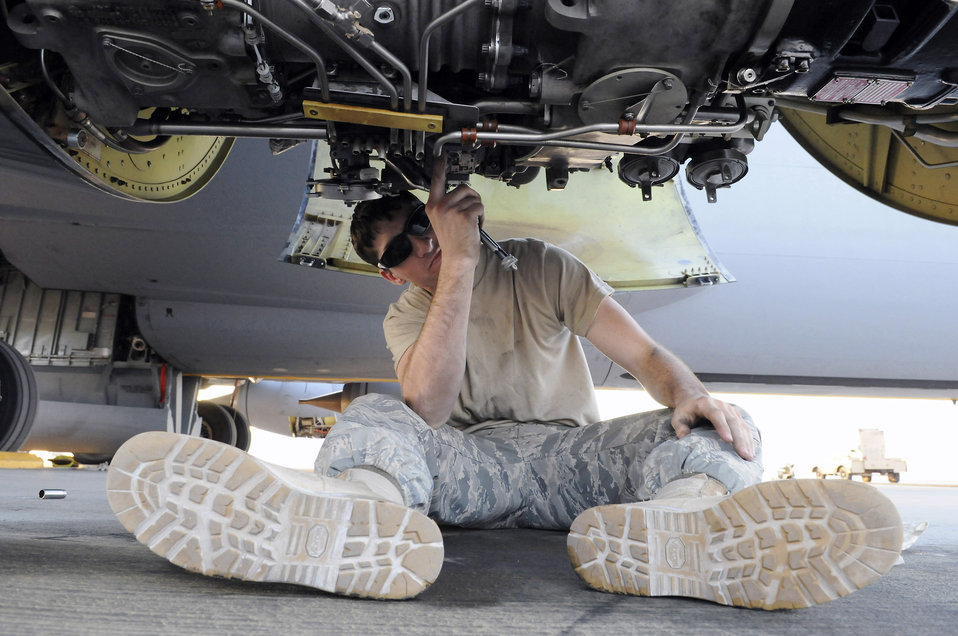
Engine tune up

Airman 1st Class Alexander Lesch attaches safety wire securing a nut during a 120-hour inspection on a KC-135 Stratotanker engine Nov. 20 at an air base in Southwest Asia. KC-135s provide the core aerial refueling capability for the Air Force and support to Navy, Marine Corps and allied nation aircraft in the U.S. Central Command area of responsibility. Airman Lesch is a native of Burlington, Wis., and is deployed from Grand Forks Air Force Base, N.D. He is assigned to the 379th Expeditionary Aircraft Maintenance Squadron.